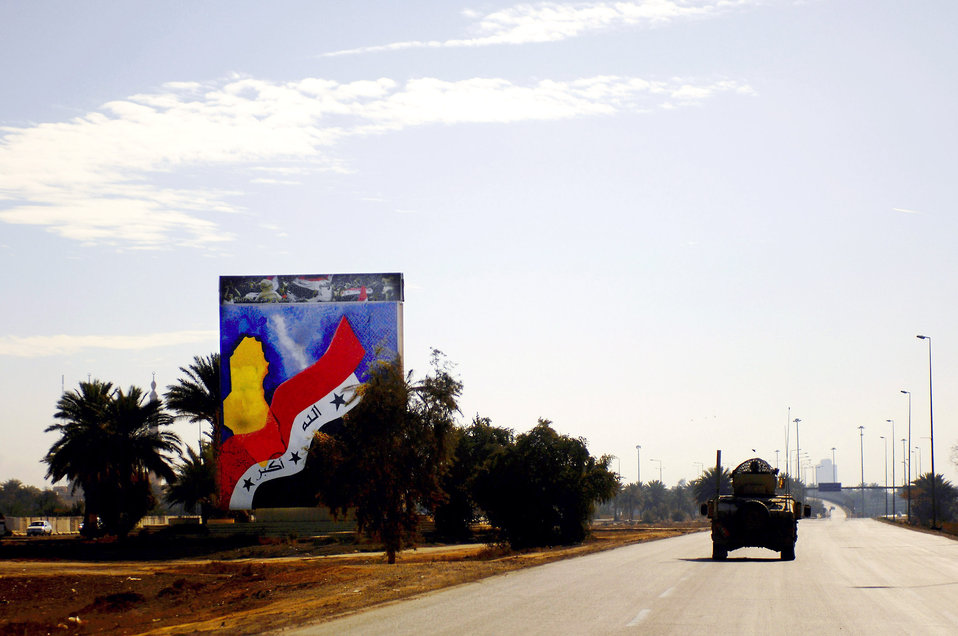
Airmen improve Iraq's security

Air Force security forces Airmen assigned to Det. 3, 732nd Expeditionary Security Forces Squadron patrol the east and west section of Rasheed, Iraq, Feb. 23. Security forces Airmen are deployed to the Det. 3, 732nd Expeditionary Security Forces Squadron at Sather Air Base, Iraq.